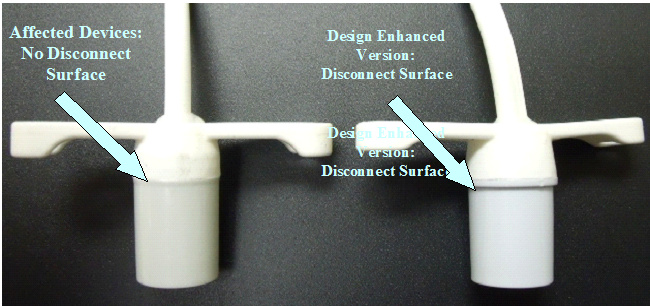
RECALLED - Tracheostomy tubes

December 22, 2011 - SSmiths Medical Issues Urgent Device Recall of Certain Bivona® Neonatal, Pediatric, and Flextend Tracheostomy Tubes.